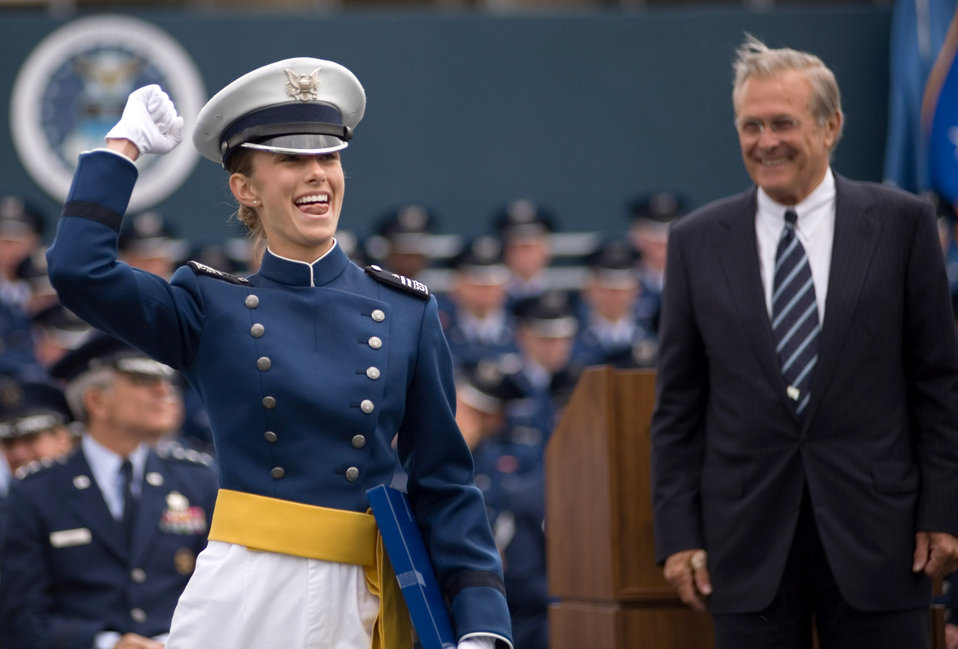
Rumsfeld voices confidence in academy graduating class

Second Lt. Liesl Shockley celebrates after receiving her diploma from Secretary of Defense Donald H. Rumsfeld at the U.S. Air Force Academy's 2006 graduation ceremony in Colorado Springs, Colo., on Wednesday, May 31, 2006. Lieutenant Shockley, a distinguished graduate, finished second in her class of 879 newly commissioned officers.